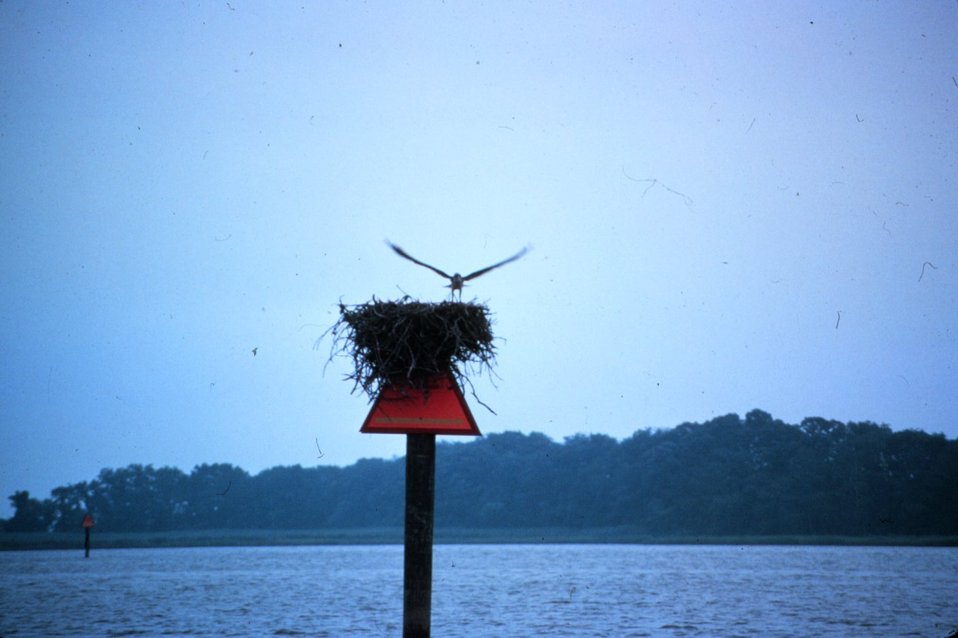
Osprey landing on nest on Coast Guard daymark.